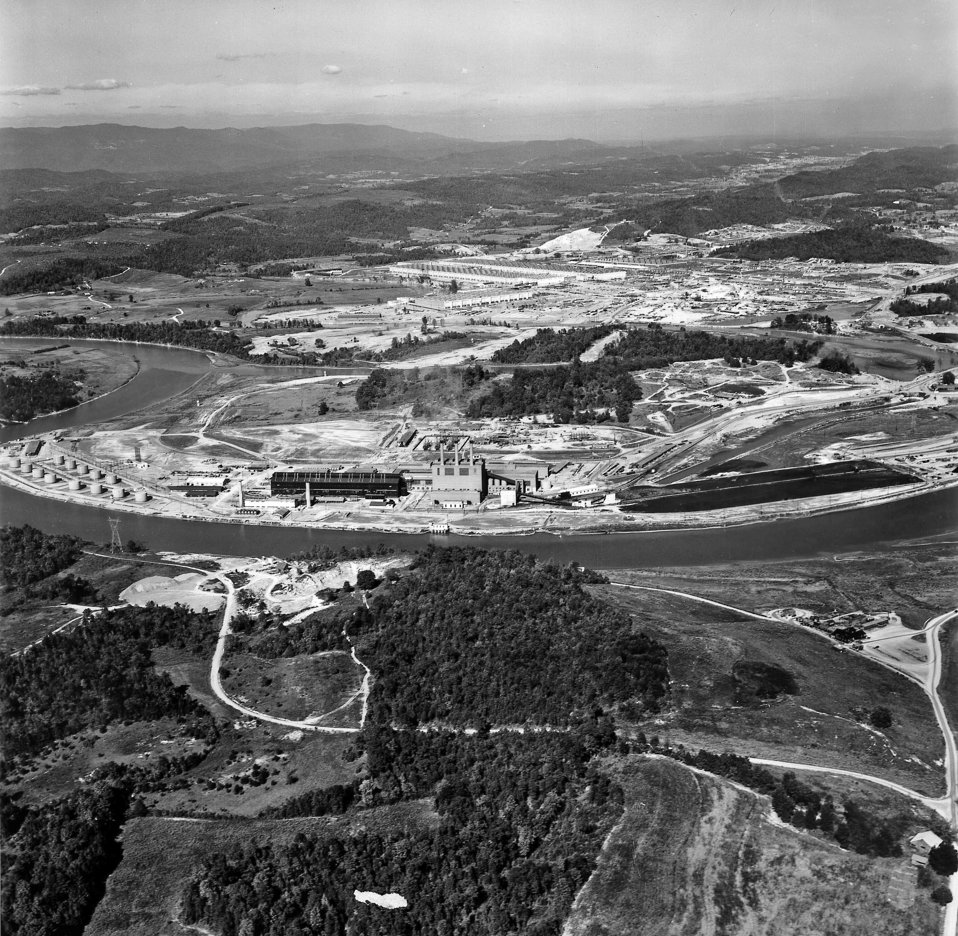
K-25 Plant Aerial Oak Ridge

MED 264 DOE photo by Ed Westcott 1945 Oak Ridge Tennessee